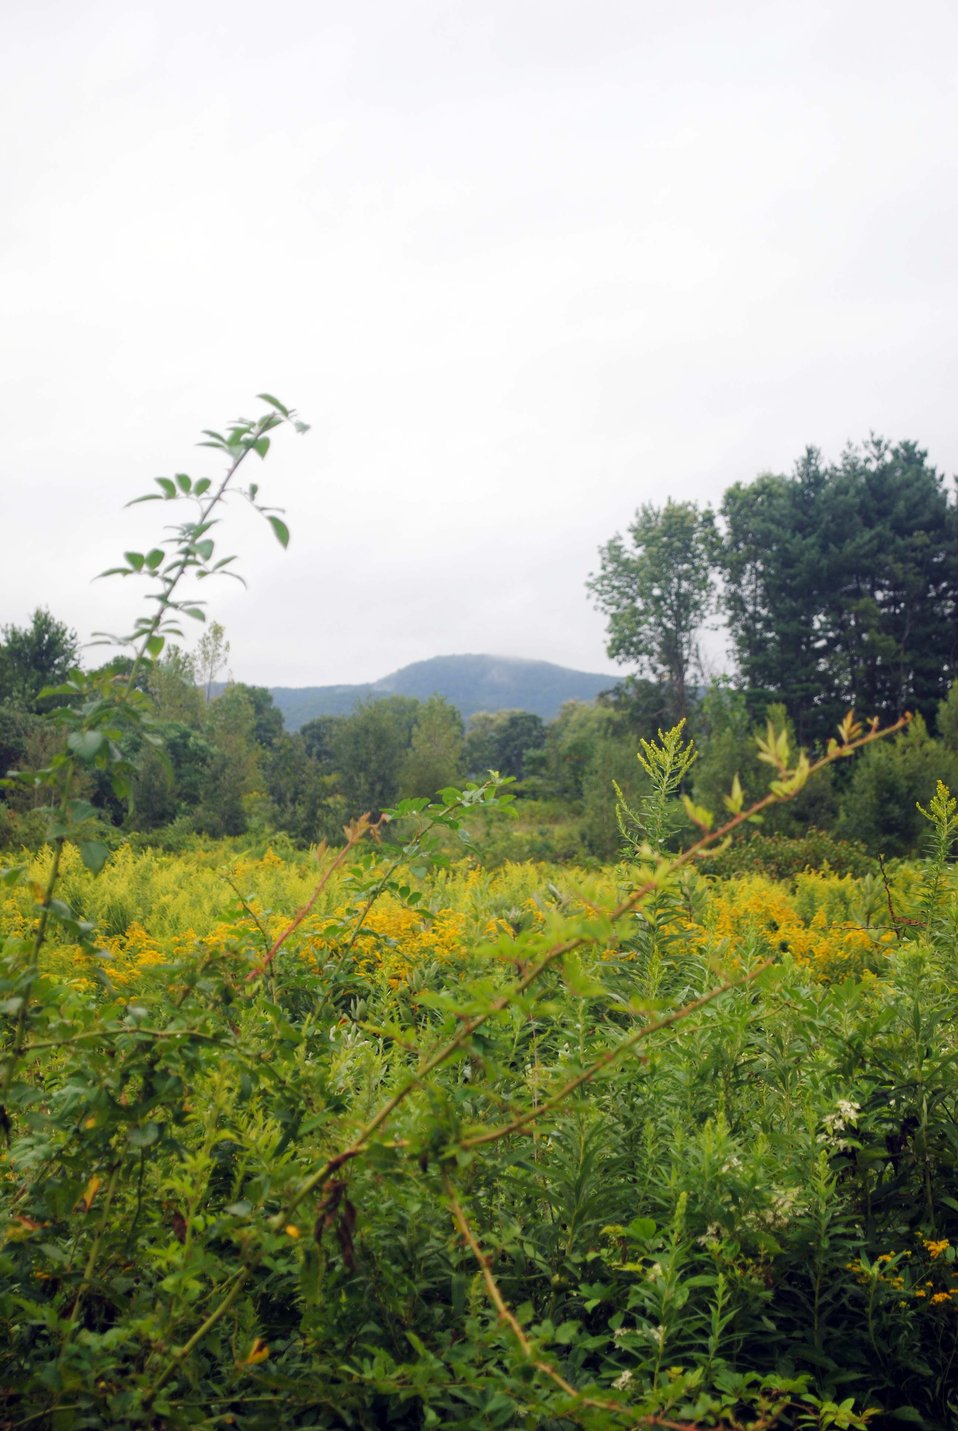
Mountain in the background at the Fort River Division of the Silvio O. Conte National Wildlife Refuge, Hadley, MA.